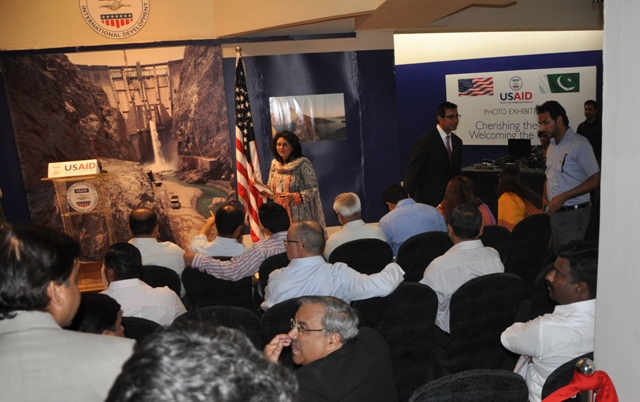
Guests at the USAID Provinicial Mission Director Punjab talking at the Retrospective USAID Exhibition